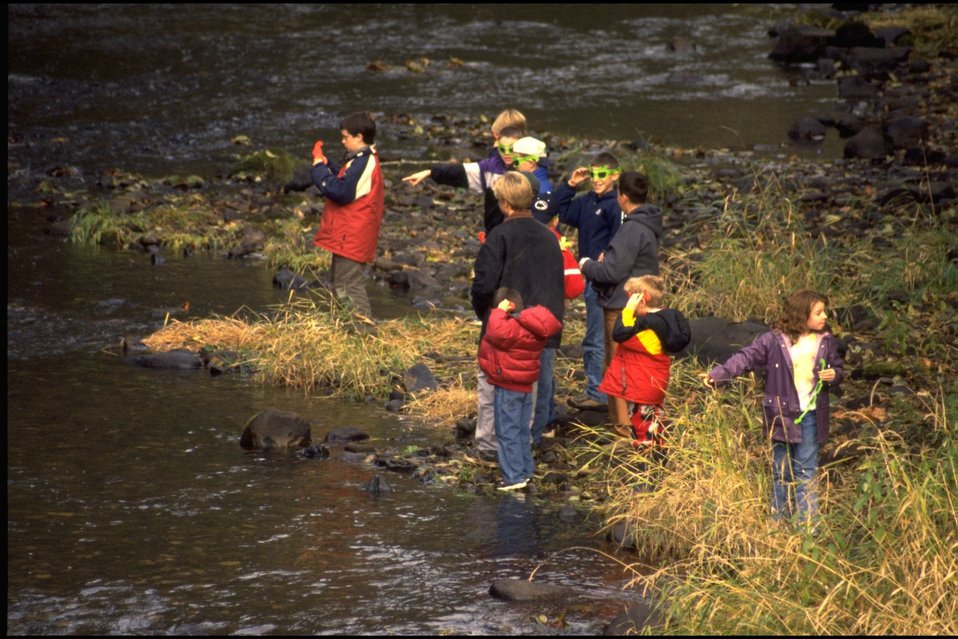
Salmon Watch Program (Fish Creek) - Crow/Applegate Schools.